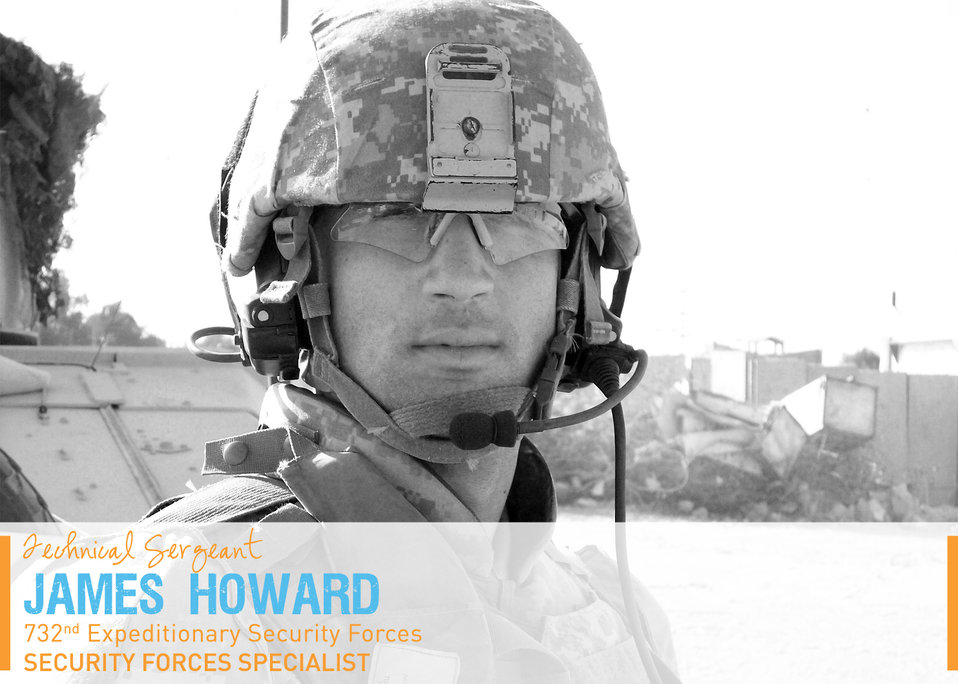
Portraits in Courage 4: Tech. Sgt. James Howard, security forces specialist, 732nd Expeditionary Security Forces. He led a combined Air Force-Iraqi Police team to collect intelligence and evidence in a case involving the murder of several Iraqi civilians. His investigative skills proved crucial in the arrest of three murder suspects.